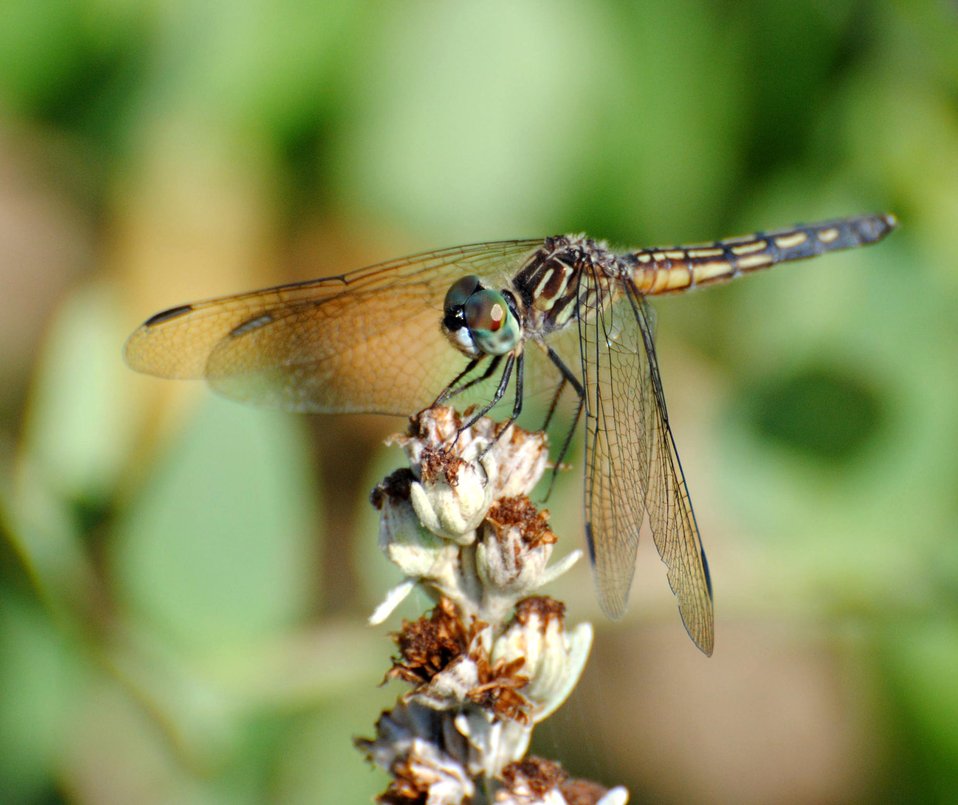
Dragonfly

Great Bay National Wildlife Refuge, MA.